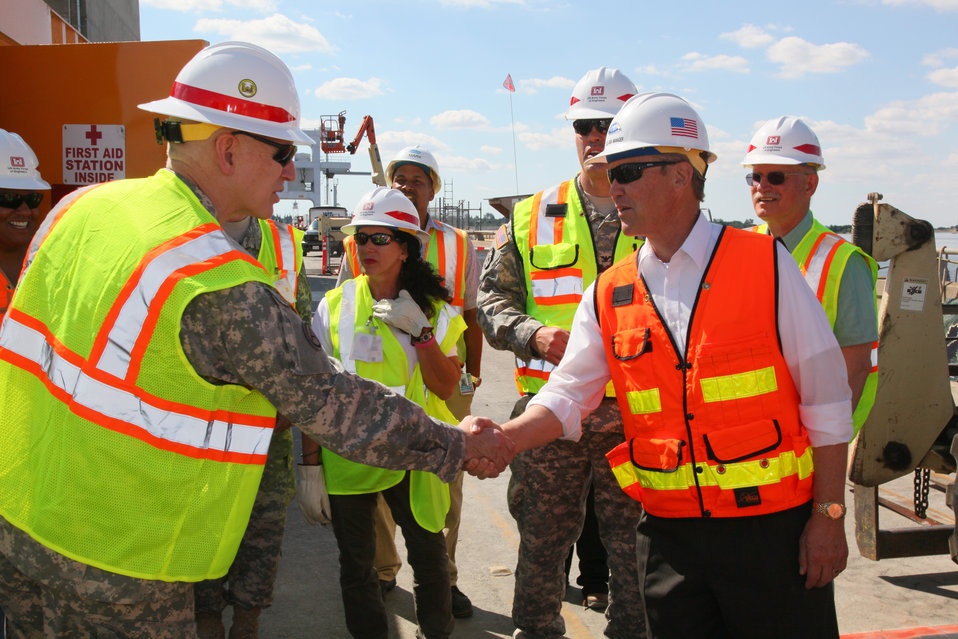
Corps’ Civil Works Leaders visit the Folsom Dam Joint Federal Project

Maj. Gen. William T. Grisoli (left), Deputy Commanding General for Civil and Emergency Operations for the U.S. Army Corps of Engineers, accepts a welcome greeting from Mike Finnegan, area manager for the Bureau of Reclamation’s Folsom Dam office. Finnegan and his staff offered a bird’s eye view of the auxiliary spillway construction to Grisoli and other visiting senior leaders from the Corps.